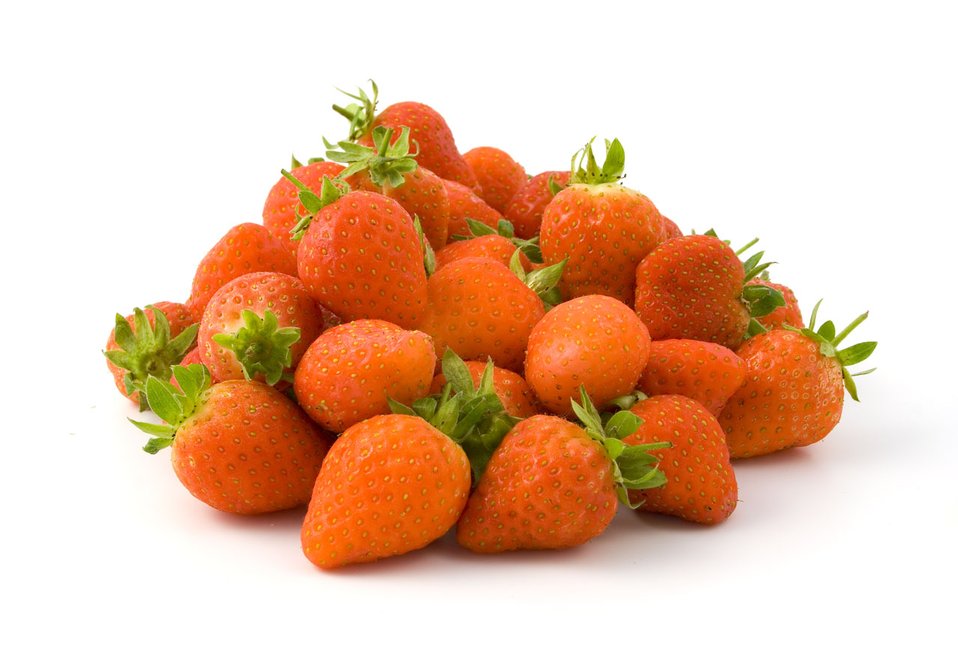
Pile of strawberries

A pile of fresh strawberries on white background..